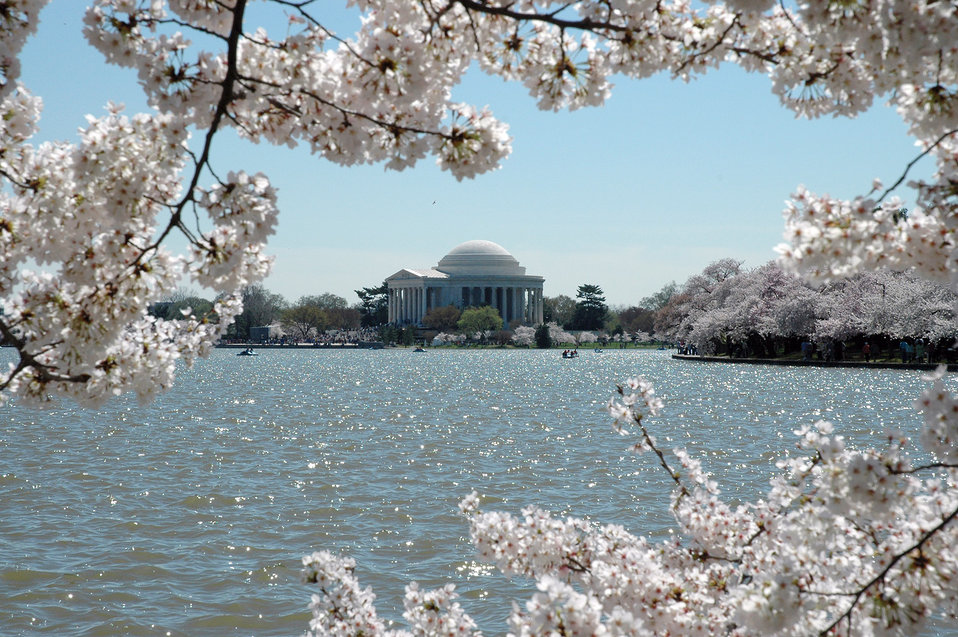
20100401131824 EDITED

Photo courtesy of the National Park Service photo gallery – The cherry blossoms in full bloom